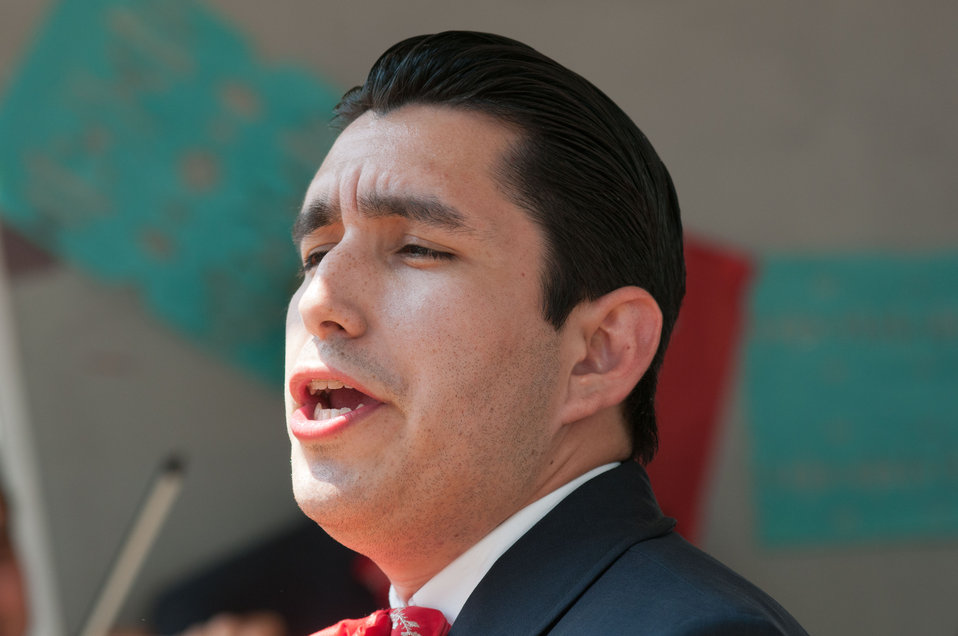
Mariachi Jose Rangel sings during the 2012 Smithsonian Folklife Festival for the University of Texas - Pan American tent, sharing the Mexican Pan American musical traditions, on the National Mall in Washington, D.C., on Wednesday, June 27, 2012 One of the three themes this year is “Campus and Community.” It celebrates the 150 years of the USDA and the Land-Grant University System. The U.S. Department of Agriculture (USDA) and the Land-Grant system extend education across the country, contributing to American agriculture success and rural prosperity. “Campus and Community” has demonstrations, discussions, hands-on activities, and entertainment to that showcase the many ways that this partnership works to improve American agriculture and rural life.